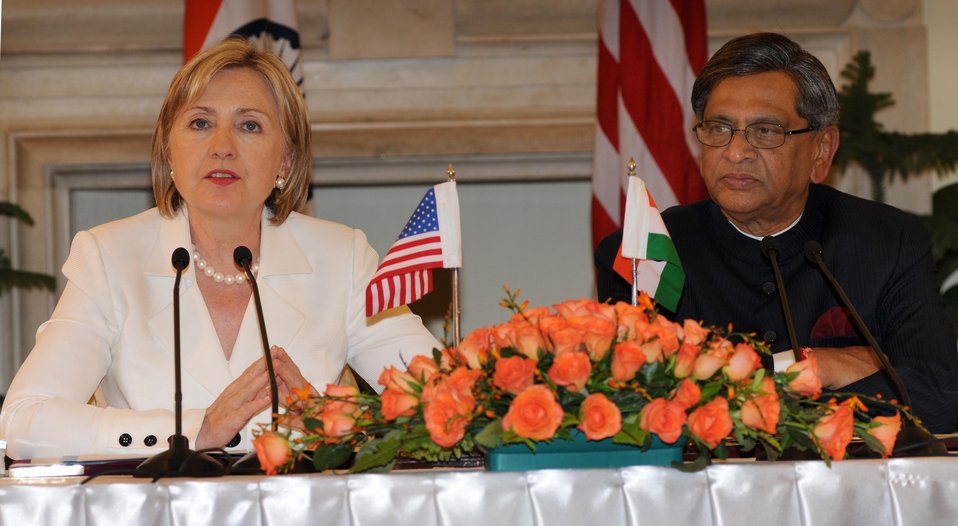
U.S., India Sign Bilateral Science and Technology Endowment Agreement

U.S. Secretary of State Hillary Rodham Clinton and Indian Minister of External Affairs S.M. Krishna speak to reporters following the signing of a U.S.-India bilateral science and technology endowment agreement in New Delhi, India July 20, 2009.